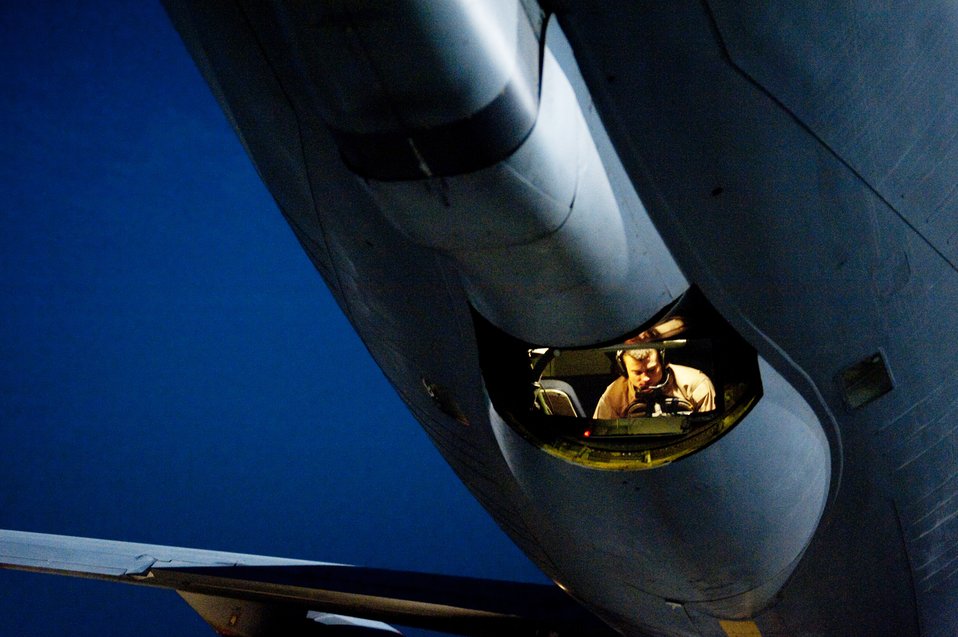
KC-135 crews prepare for mission

Senior Airman Andrew Deck conducts a KC-135 Stratotanker preflight check, Dec. 2, 2009, at an airfield in Southwest Asia. Airman Deck is a boom operator assigned to the 340th Expeditionary Air Refueling Squadron.